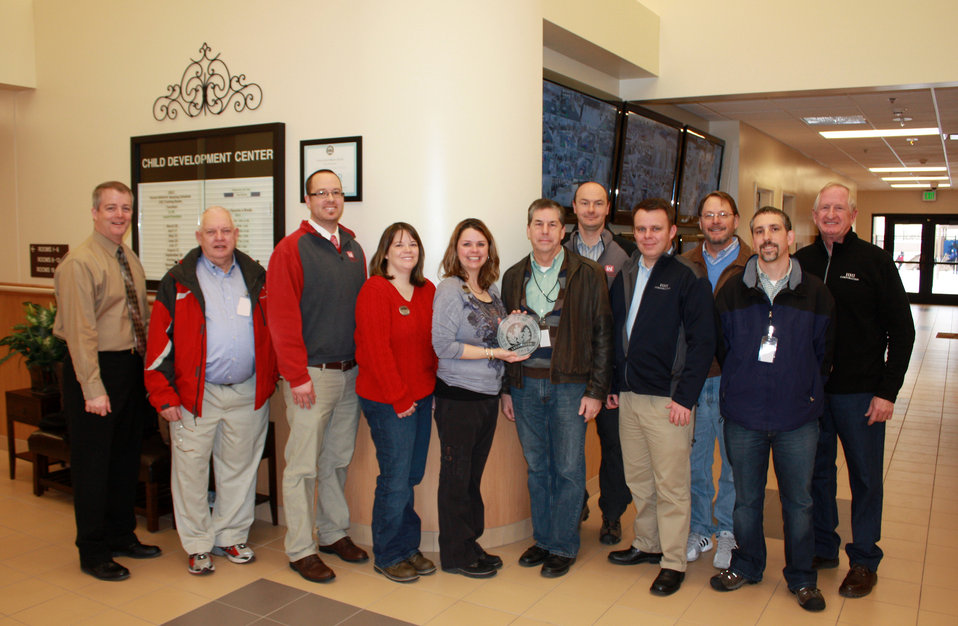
Hill Air Force Base child development center receives LEED-Silver designation

HILL AIR FORCE BASE, Utah (Jan. 18, 2013) – The new child development center became the first LEED-certified project at Hill Air Force Base, Utah, receiving the official designation of LEED-Silver during a ceremony Jan. 10. The U.S. Army Corps of Engineers Sacramento District oversaw construction of the facility. Under the LEED program, which stands for Leadership in Energy and Environmental Design, projects are recognized for efficient design and construction in categories including sustainable sites; water efficiency; energy and atmosphere; materials and resources; indoor environmental quality; and innovation in design. The 36,000-square-foot facility was designed and constructed at a cost of $10.2 million, and received an official “Outstanding” performance evaluation from the installation. The facility was formally handed over to the installation in April 2012.

The designation for the facility was achieved even without many of the common LEED design and construction credits – primarily due to the specialized nature of the project such as the specific site designation and the constrained confines of Hill AFB. In order to achieve LEED-Silver, the design and construction of the facility had to provide additional credits from other project categories such increased water efficiency and the use of low-emitting materials such as composite wood.

Pictured is the project team, from left to right: John Cullinane, Hill AFB family services director; Don Hokanson, CEO of HHI Corporation, the contractor for the project; Jason Redeen, resident engineer of the Sacramento District’s Utah Resident Office; Penny Schmutz, assistant CDC director; Missy Neitzel, CDC director; Tom Stonehocker, LEED coordinator for the Utah Area Office; Doug Wesemann, a Corps project engineer; Matt Gehring, quality control representative and LEED director for HHI Corporation; Tim Willard, the Corps’ Utah area engineer; Adam Ashton, a Corps project quality assurance representative; and Robert Smith, Vice President of HHI Corporation.